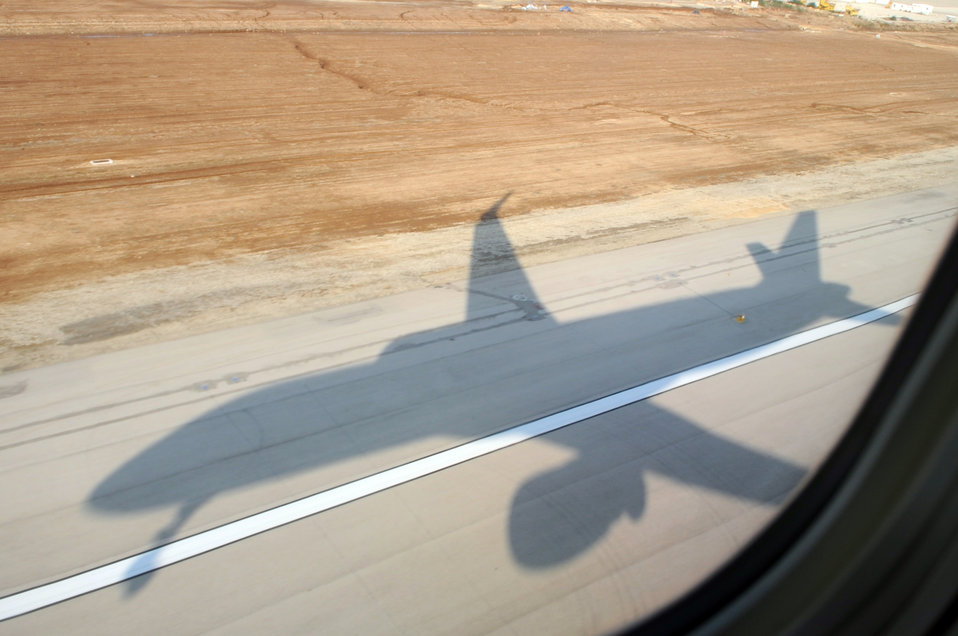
Secretary Kerry's Aircraft Approaches Touchdown in Israel

The aircraft carrying U.S. Secretary of State John Kerry is silhouetted against the runway at Ben Gurion International Airport as he arrived in Tel Aviv, Israel, on January 2, 2014, for Middle East peace talks.